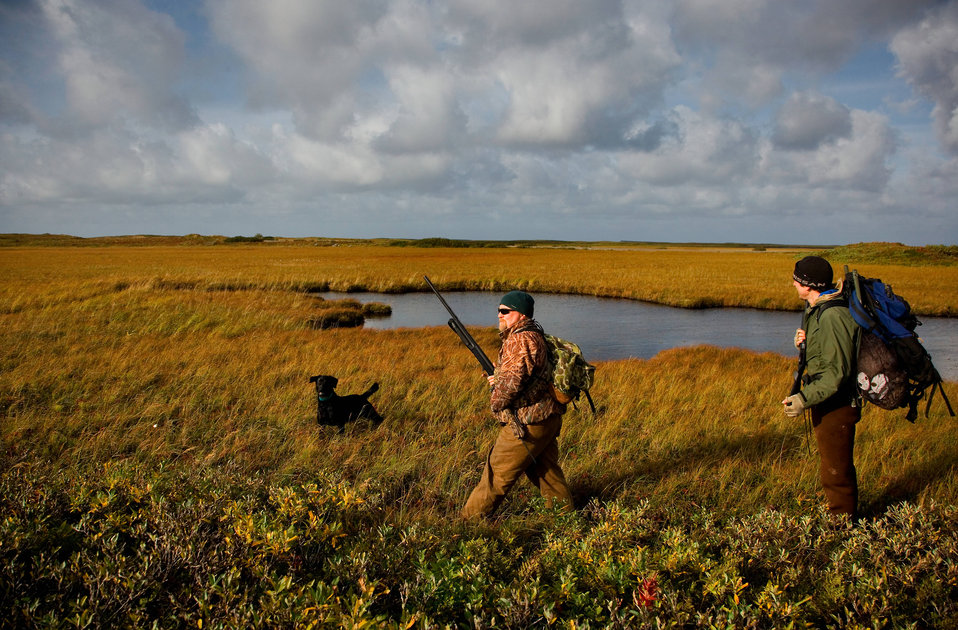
Duck Hunting

Photo credit: USFWS/Ryan Hagarty

Hunting, fishing, and other wildlife-related recreation in the United States (an example of provisioning and cultural services) is estimated to contribute $122 billion to our nation’s economy annually